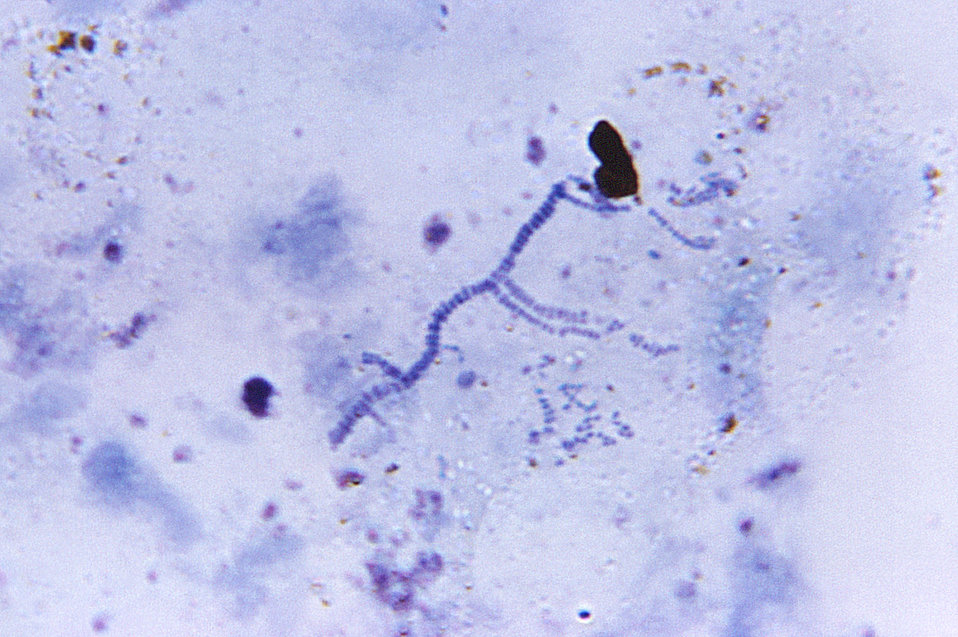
Magnified 375X, this Giemsa-stained photomicrograph revealed some of the ultrastructural morphology displayed by Dermatophilus congolensis bacteria, including branching hyphae, and numbers of zoospores.